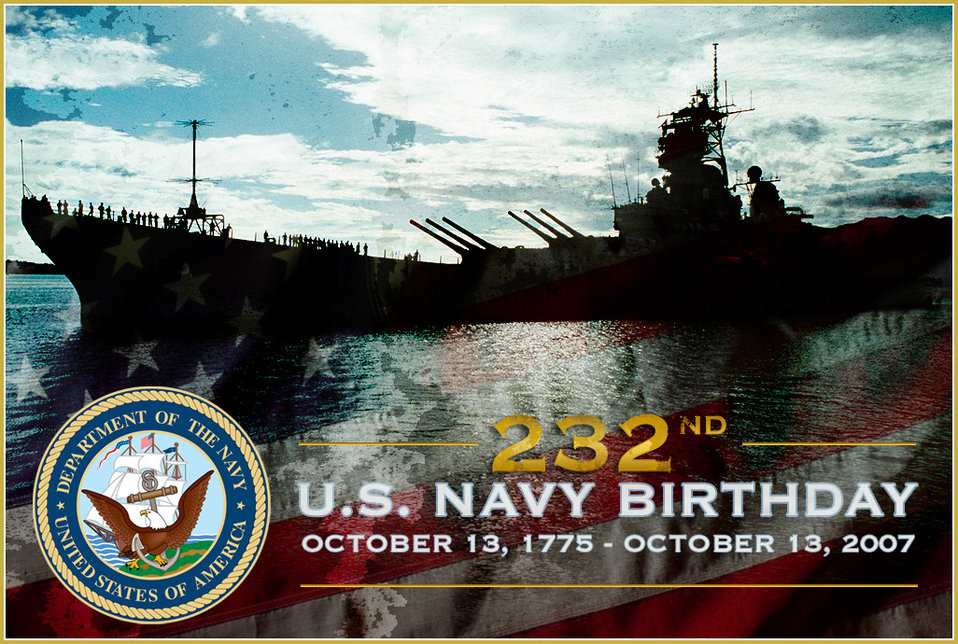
U.S. Navy celebrates 232 years of service

The U.S. Navy celebrates 232 years of service to the nation Oct. 13.